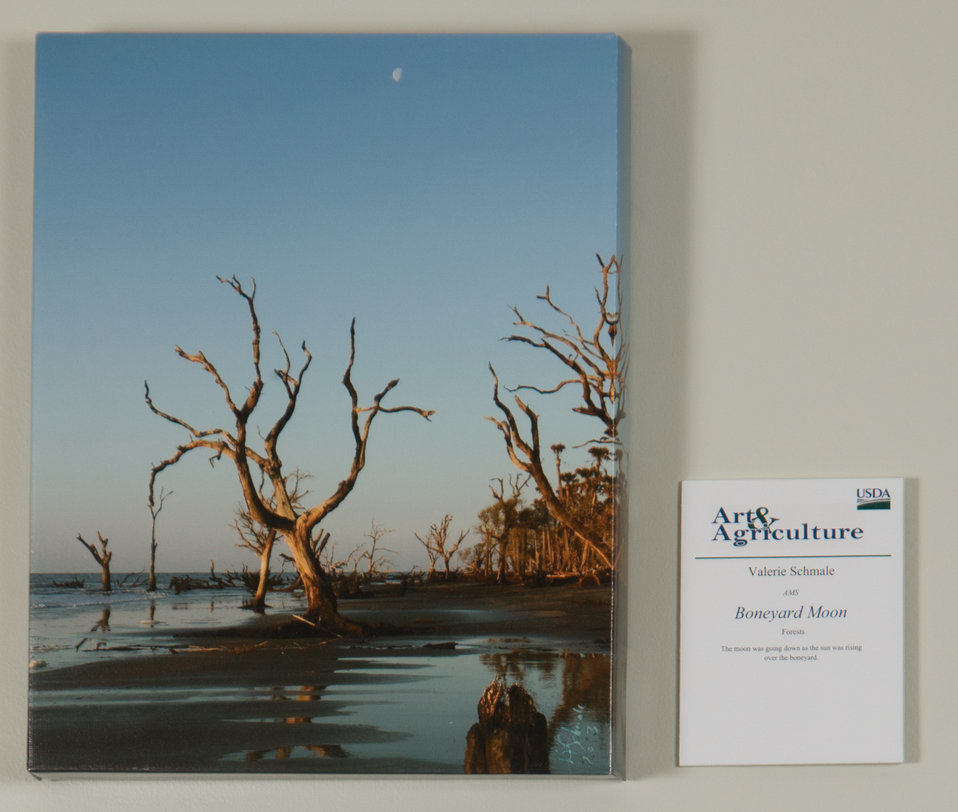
Online Viewer's Choice entries of the 2013 Art & Agriculture, Tuesday, July 9, 2013, in the South Building, Washington, D.C. Themes were expressed by employees from across the department and the contest was open to full-time and part-time USDA employees. Winning artwork will be displayed till the end of the year. U.S. Artistic expression is a creative outlet that is vital for an individual to grow and develop.